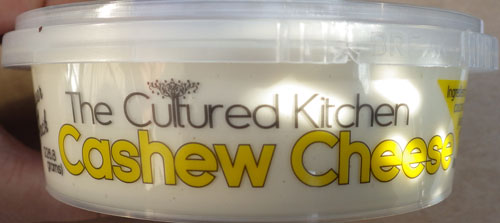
RECALLED – Non-dairy cashew cheese products

ecember 31, 2013 – The Cultured Kitchen® Voluntarily Recalls Cashew Cheese Due To Possible Risk Of Contamination From Salmonella
Photos.